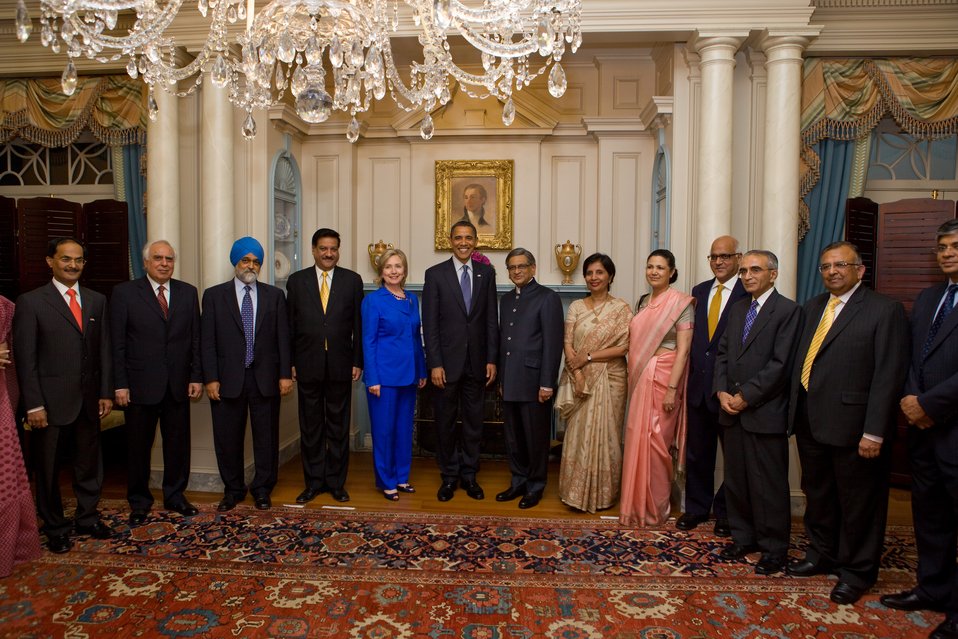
President Obama, Secretary Clinton, and the Indian Delegation Pose for a Photo

U.S. President Barack Obama, U.S. Secretary of State Hillary Rodham Clinton, and the Indian delegation pose for a photo at the U.S.-India Strategic Dialogue reception at the U.S. Department of State in Washington, D.C., on June 3, 2010.